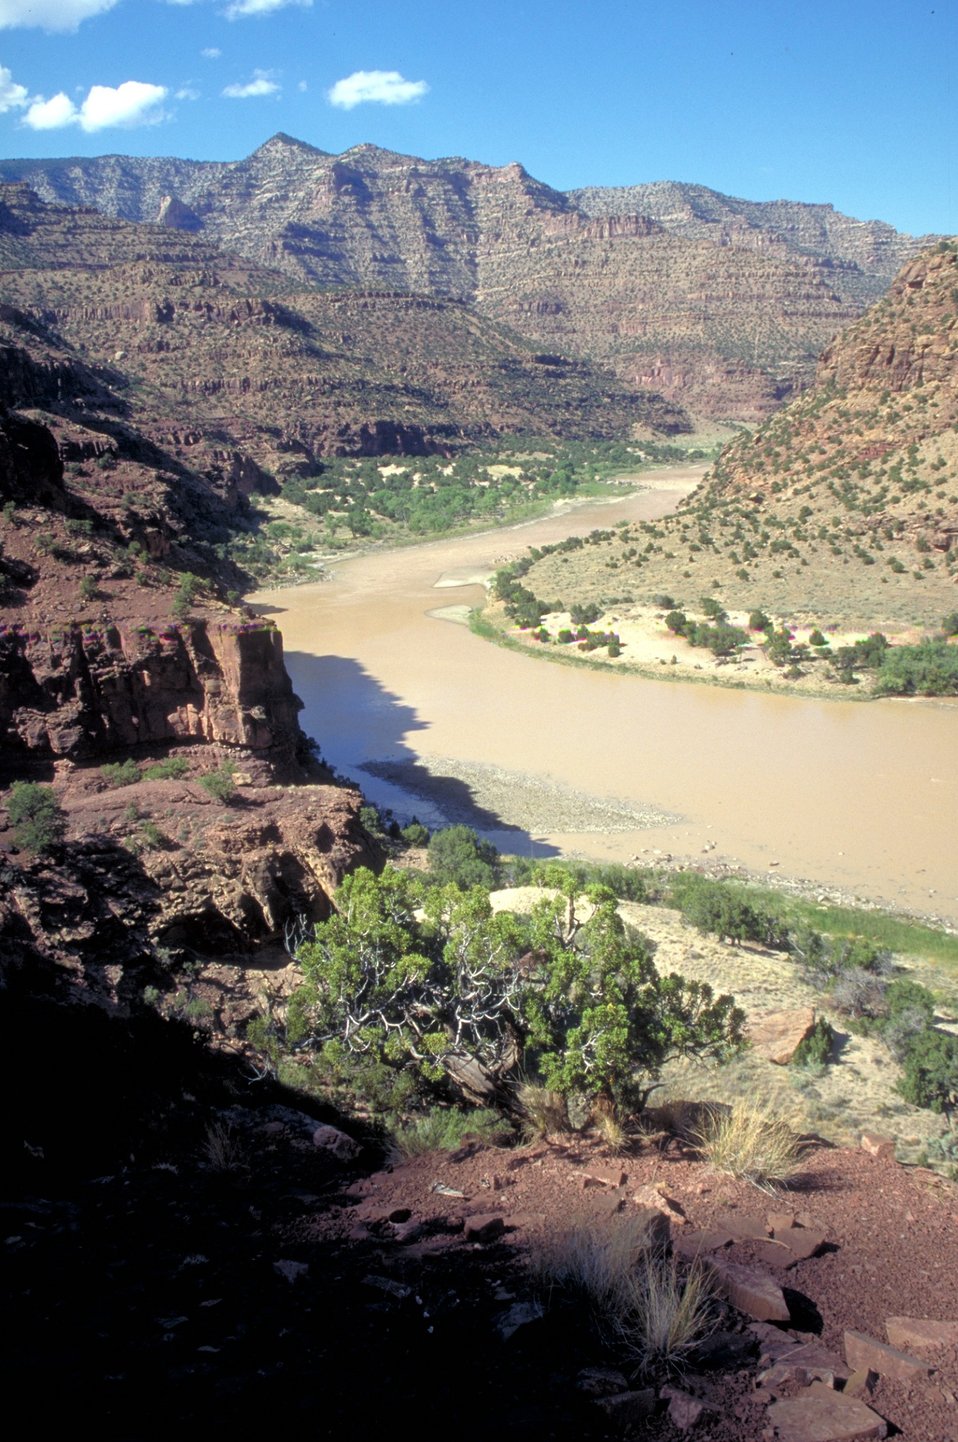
Desolation/Gray Canyons near Price, Utah.